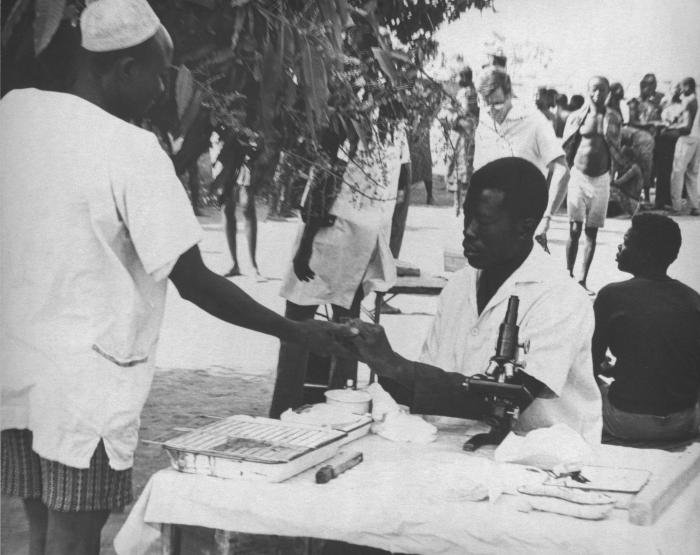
This Niger-based Primary HC Mobile-Unit was assisting in the control of sleeping sickness, measles, yellow fever, and malaria.